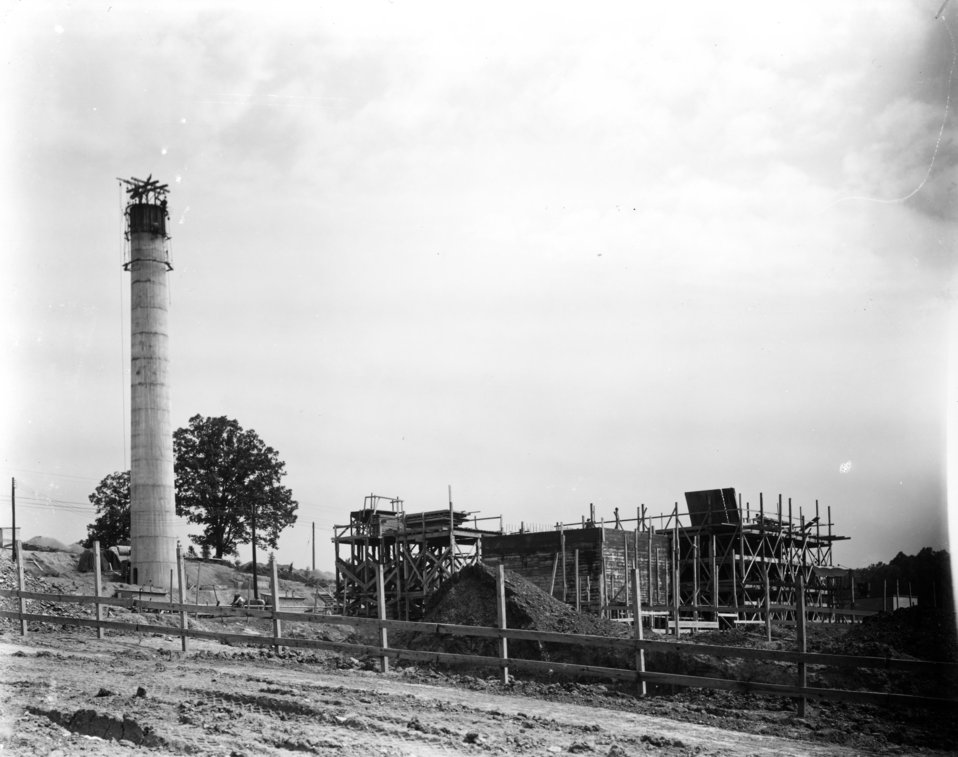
X-10 at Oak Ridge